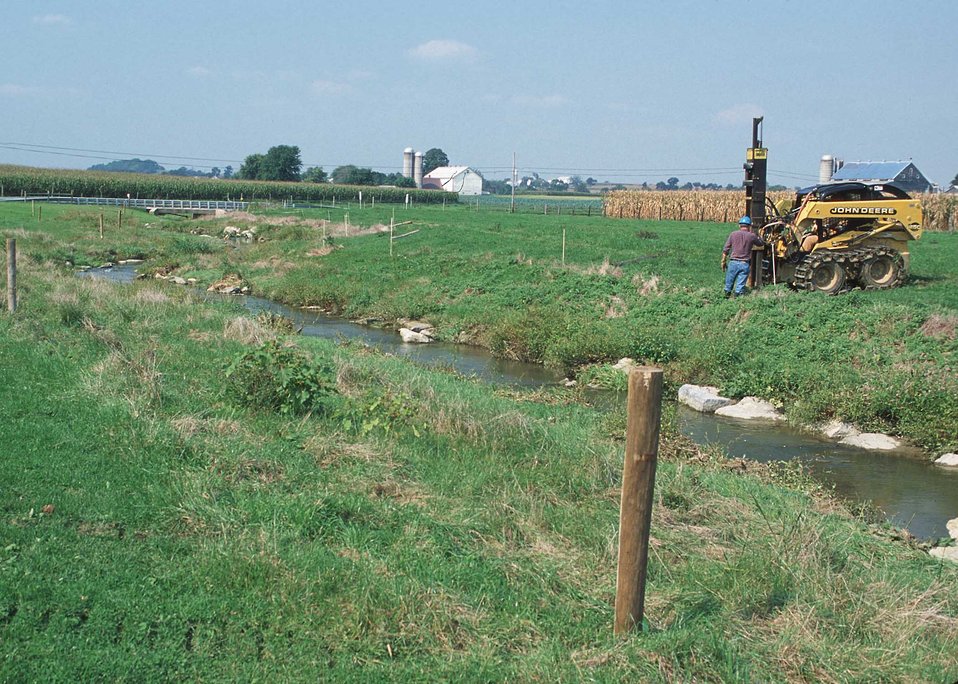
Streambank Fencing project in Lancaster County, PA.